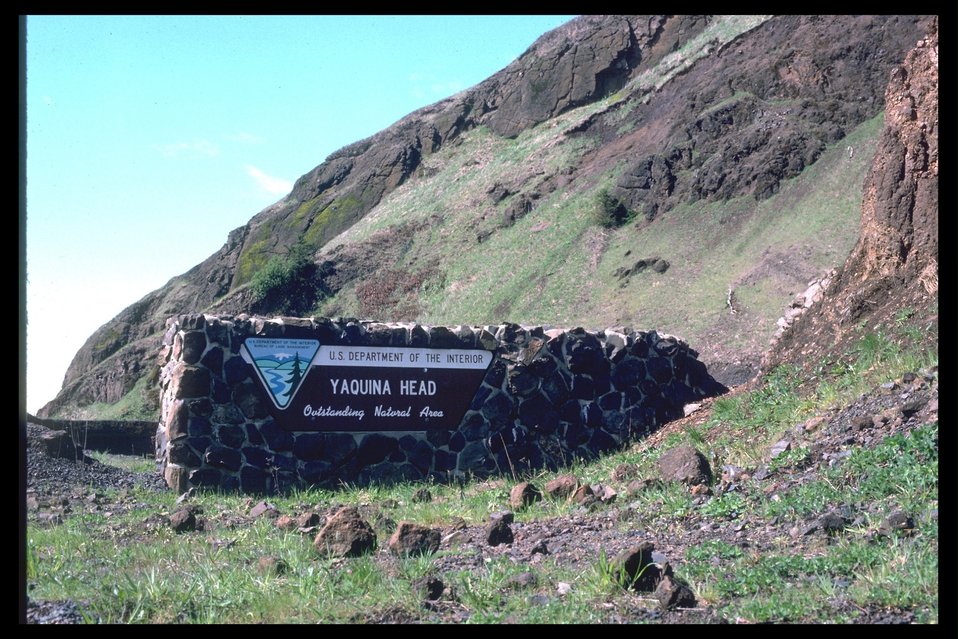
Yaquina Head entrance sign.